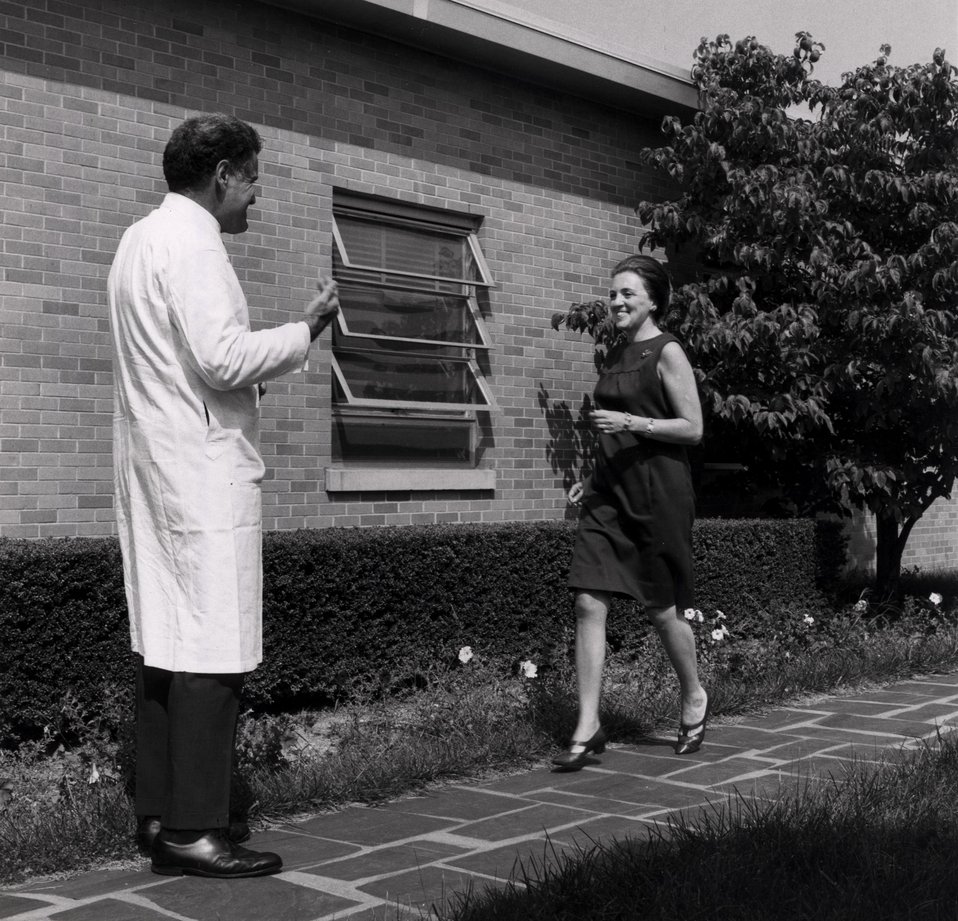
The gait of a patient receiving treatment for Parkinson's disease is being observed at the Medical Department.